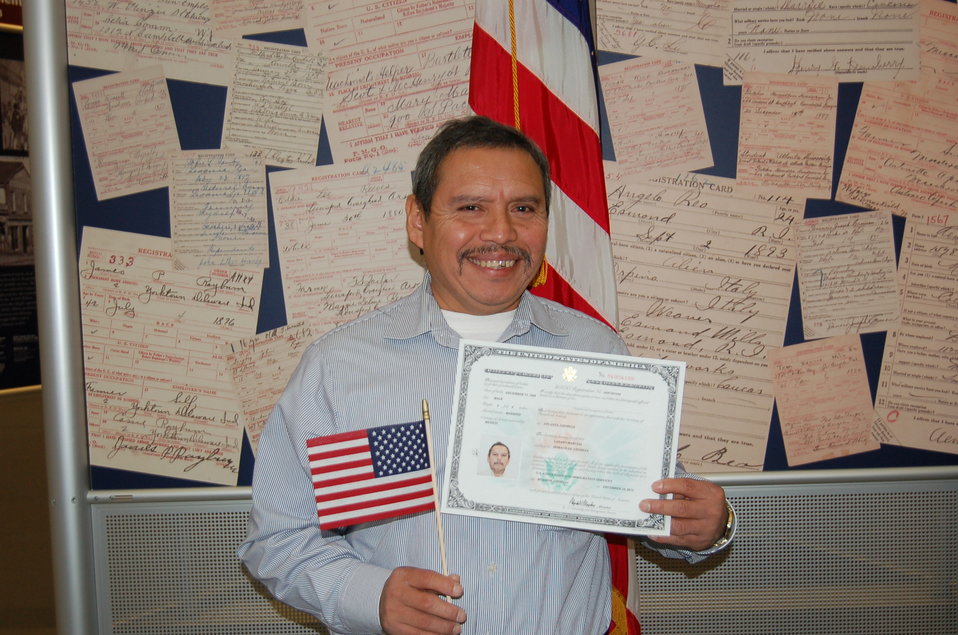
New Citizens